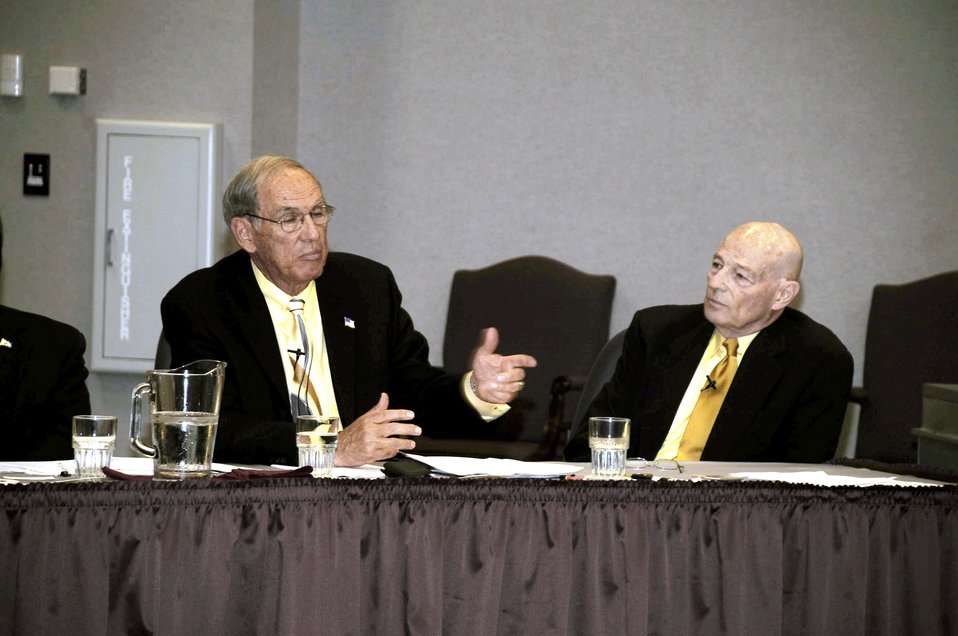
Tanker Living Legends Speaker Series - Operation Desert Shield/Desert Storm

Retired Lt. Gen. Pat Caruana (left) talks about his experience in coordinating air refueling for operations Desert Shield and Desert Storm in 1990-91. He was participating in the Tanker Living Legends Speaker Series Aug. 28, 2009, at the Global Reach Planning Center at Scott Air Force Base Ill. Sitting to his left is retired Brig. Gen. Kenneth Keller. In total, there were four panel members taking part in the speaker series which was put on by Air Mobility Command officials.